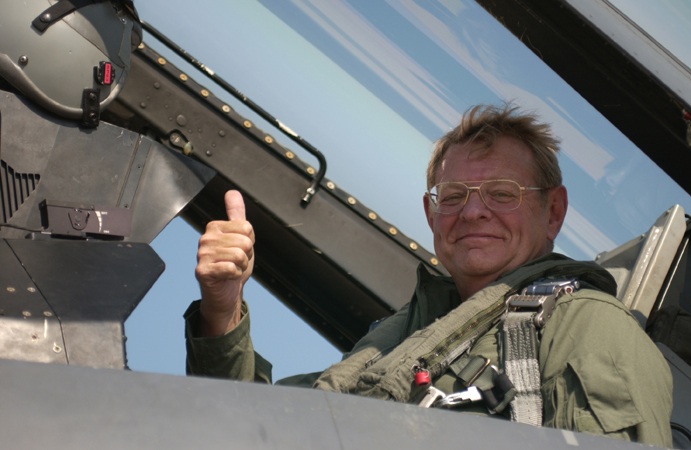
William Davidson, the administrative assistant to the secretary of the Air Force, prepares for an incentive flight in an F-16 Fighting Falcon from the 555th Fighter Squadron at Aviano Air Base, Italy. Davidson retires Sept. 30 after more than 17 years as the administrative assistant and 43 years of Air Force service.